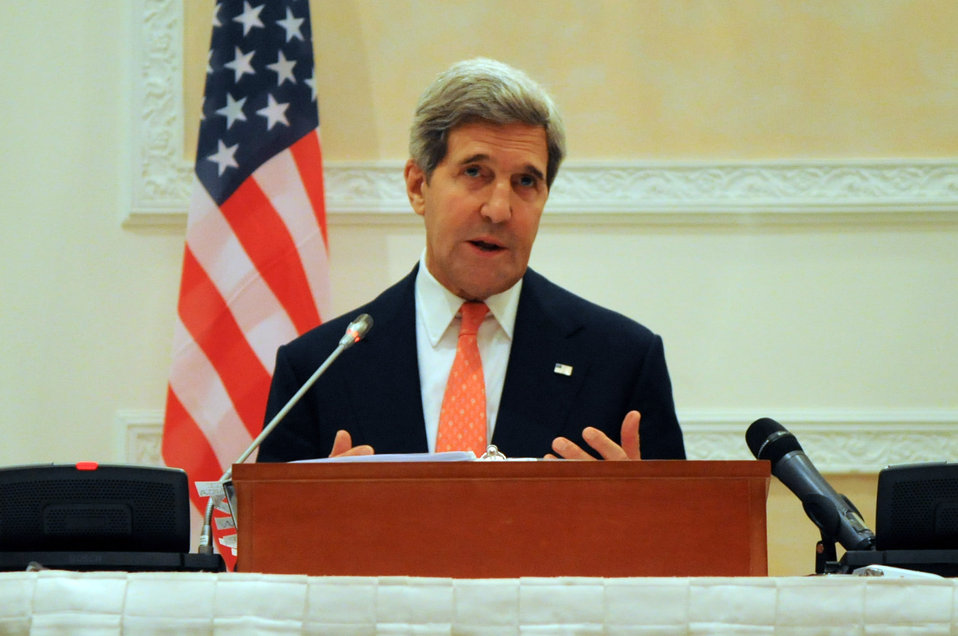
Secretary Kerry Speaks During a News Conference With Saudi Foreign Minister al-Faisal

U.S. Secretary of State John Kerry speaks during a news conference with Saudi Foreign Minister Saud al-Faisal in Riyadh, Saudi, Arabia on November 4, 2013.